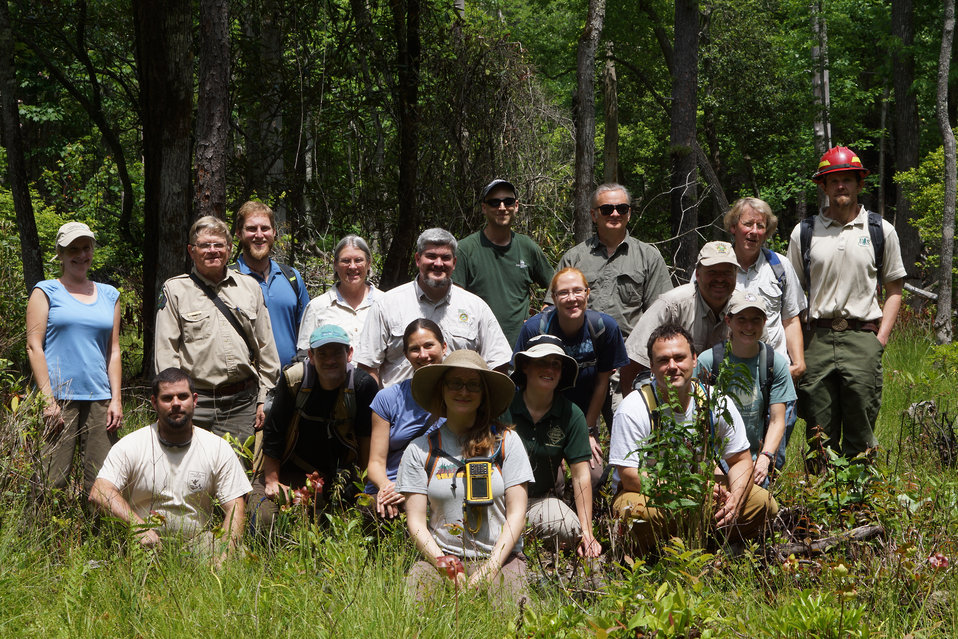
Bog Learning Network meeting attendees

In May, bog conservationists from Tennessee, North Carolina, and Georgia convened in the north Georgia mountains for the spring, 2014 meeting of the Bog Learning Network. The event provided an opportunity for biologists to see, first hand, the result of management efforts at two north Georgia bogs. More importantly, the outings provided an opportunity to share innovative approaches to bog management, such as the role of the Georgia Plant Conservation Alliance in conserving rare plants and coordinating a cadre of volunteers to work on bog management.

The Bog Learning Network was convened in the winter of 2013 as a way to bring together people working for bog conservation across the Southern Appalachians. Southern Appalachian bogs are one of North America’s rarest habitats and home to many rare plants and animals.